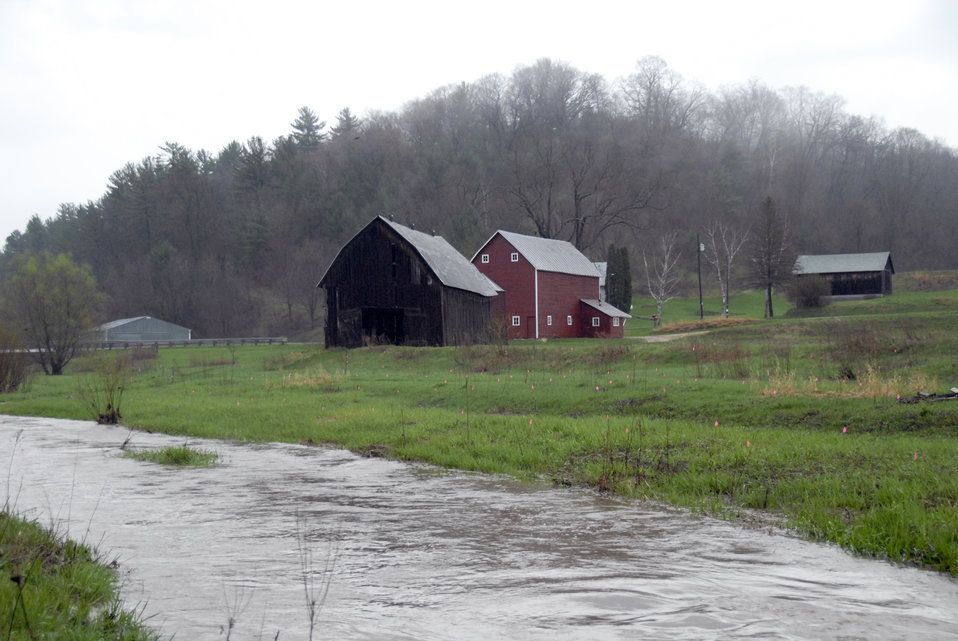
A rain-swollen stream flows through a farm in La Crosse, Wisconsin on April 25, 2008. The U.S. Department of Agriculture’s (USDA) Natural Resource Conservation Service (NRCS) has various programs to assist farmers and ranchers in implementing and maintaining conservation practices that will enable them to have more sustainable and profitable farms and ranches.